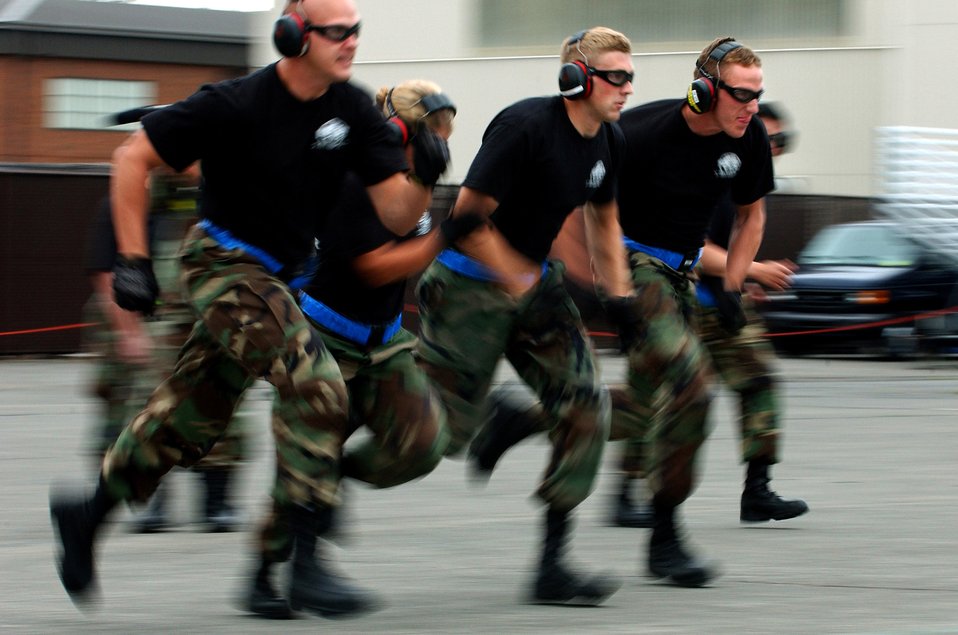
Here we come

Airmen from the 436th Aerial Port Squadron at Dover Air Force Base, Del., run toward a C-5 Galaxy to unload vehicles for the engine running on- and off-loading competition at McChord Air Force Base, Wash., July 23. The event was part of Air Mobility Command's Rodeo 2007.